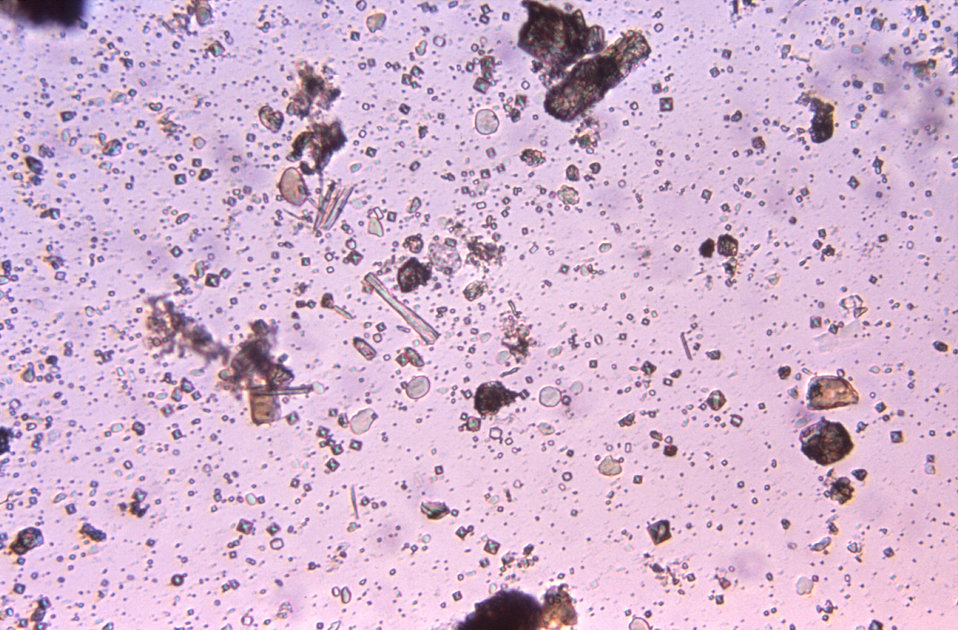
Magnified 100X, this concentrated, unstained photomicrograph revealed the presence of two different protozoan parasites, Entamoeba coli and Endolimax nana. Both of these intestinal parasites live as commensal organisms, existing harmlessly in the human digestive tract. Of importance, is the fact that these organisms can often be confused with their pathogenic counterpart, E. histolytica.